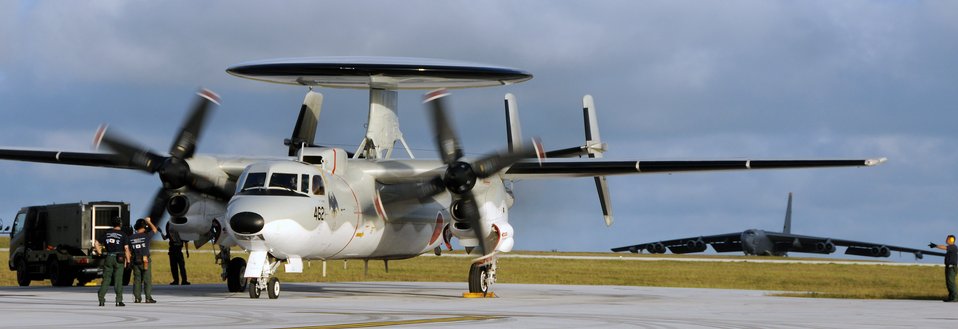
Long-range 'eyes and ears'

A Japanese Air Self Defense Force E-2C Hawkeye joins a B-52 Stratofortress bomber Feb. 4 for the two-week Cope North exercise at Andersen Air Force Base, Guam.